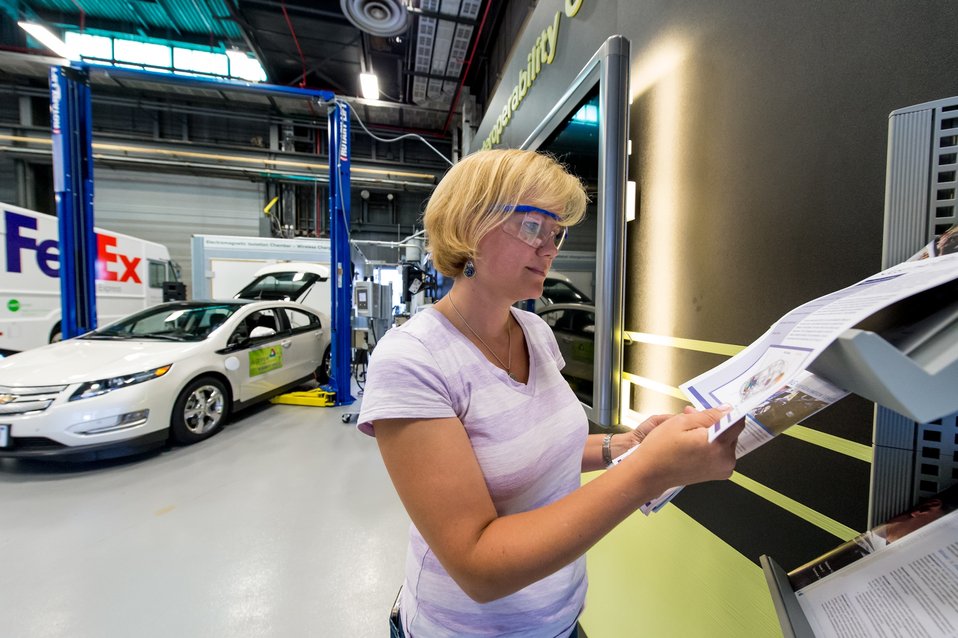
PARTICIPANTS IN THE 2013 ARGONNE SUSTAINABILITY TEACHERS WORKSHOP.

Workshop participants had an opportunity to explore Argonne vast array of green transportation and energy efficiency research.